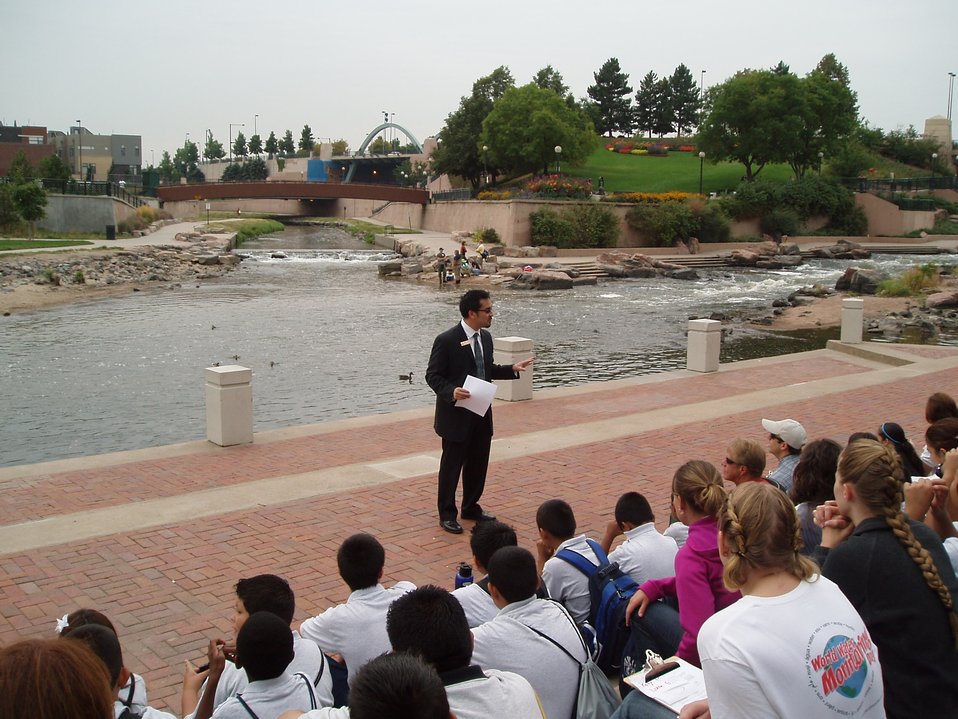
Keynote Speaker at World Water Monitoring Day

To celebrate World Water Monitoring Day, EPA partnered with CH2MHill and Water for People for a water monitoring education event, held September 16 at Confluence Park along the Platte River from 9:30 - 11:30 am. Students from local schools came out for a great day along the river to learn about their water resources.